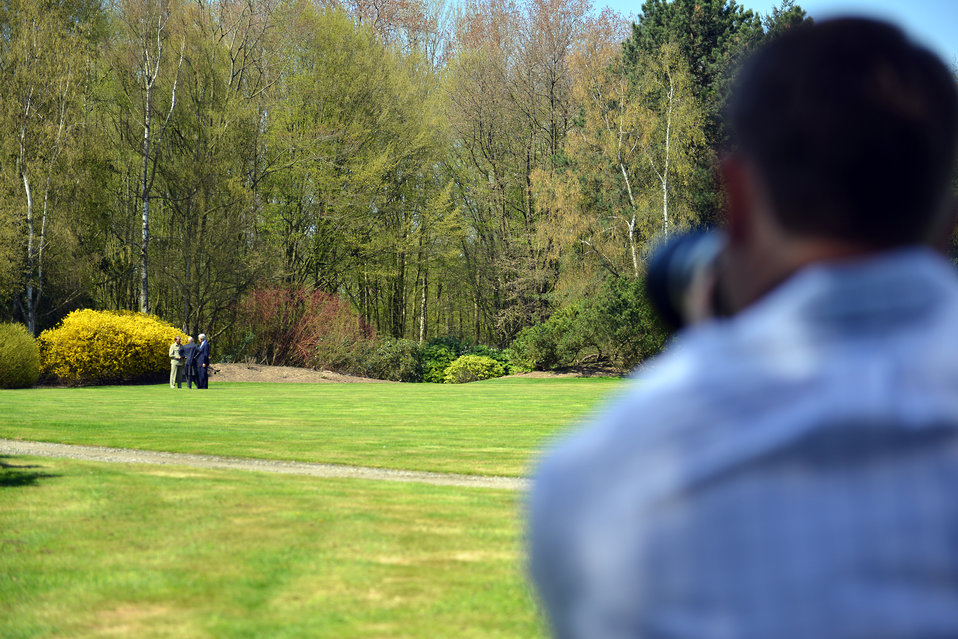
An AP Photographer Snaps a Photo of Secretary Kerry, Afghan President Karzai, and Pakistani Chief of Army Staff General Kayani

A photographer from the Associated Press snaps a photo of U.S. Secretary of State John Kerry, Afghan President Hamid Karzai, and Pakistani Chief of Army Staff General Ashfaq Kayani returning from a walk around the backyard of Truman Hall in Brussels, Belgium, on April 24, 2013.